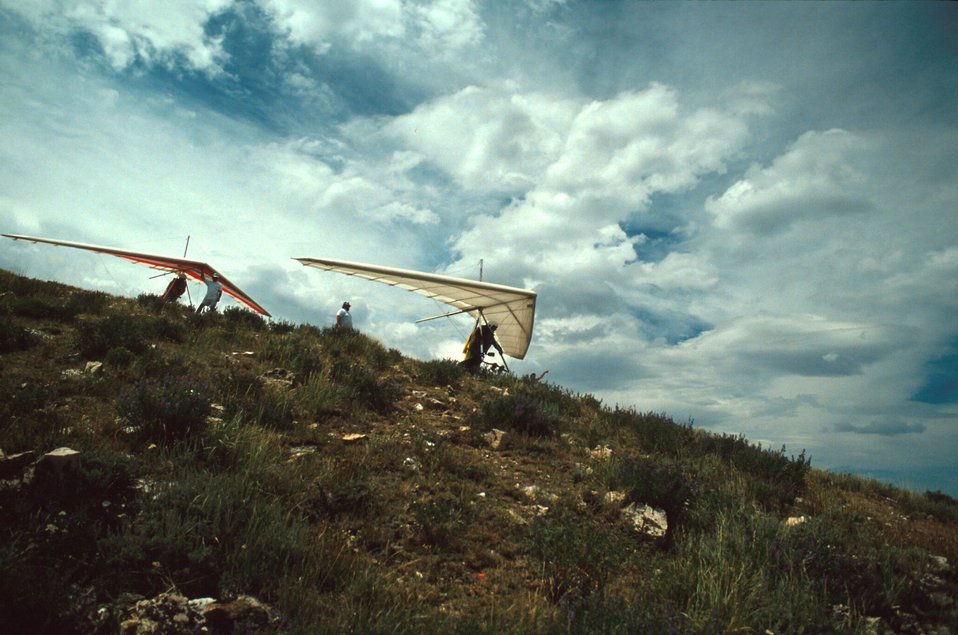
Hang Gliders King Mountain Arco Idaho Idaho Falls Field Office USRD Upper Snake River District